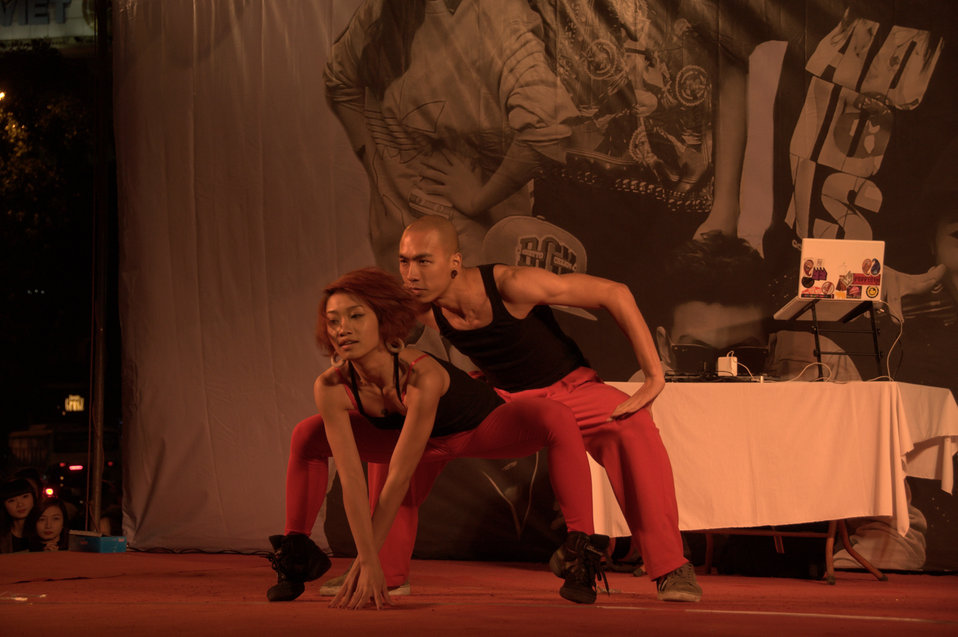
USAID and PEPFAR supports an outdoor concert to promote Vietnam's national action month for HIV

Hanoi, December 18, 2012.